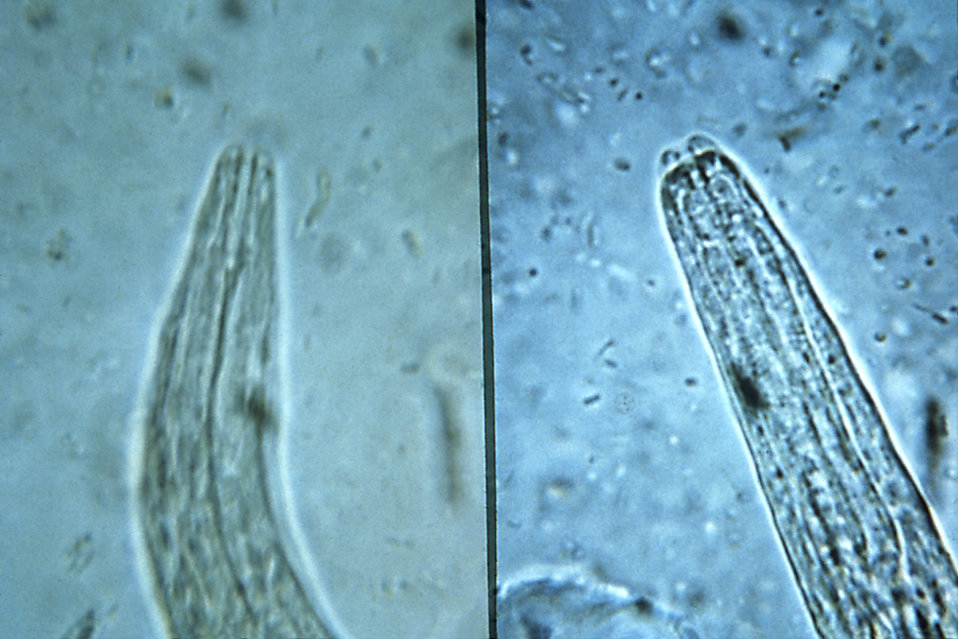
This micrograph depicts the mouth parts of rhabditiform staged larvae of a hookworm (Lt), and strongyloides (Rt); Mag. 500X.